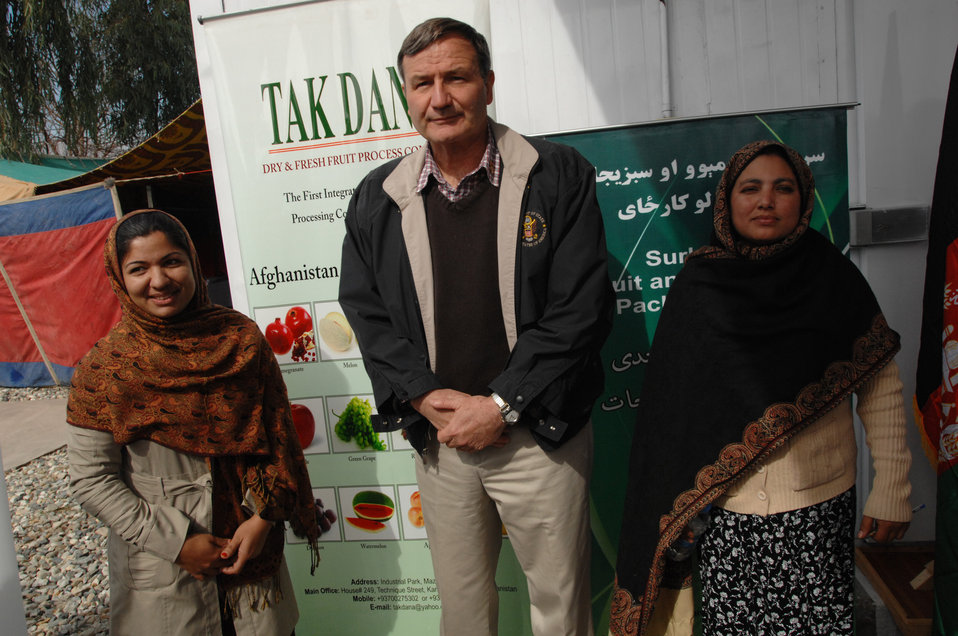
110209sv Shah278